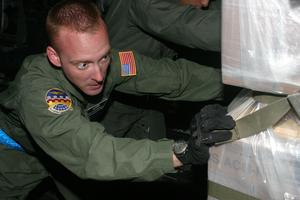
Air Force delivers humanitarian supplies to China

U.S. Air Force Tech. Sgt. Allen Minner, 15th Aircraft Maintenance Squadron, Hickam Air Force Base, Hawaii, pushes a large pallet of humanitarian supplies delivered by a C-17 Globemaster III. Thirteenth Air Force's 613th Air and Space Operations Center Air Mobility Divsion at Hickam AFB coordinated the delivery of 225,890 pounds of relief supplies to Shanghai within 18 hours of Secretary of Defense approval. Thirteenth Air Force Logistics Directorate tasked personnel to prepare cargo and coordinated with Air Terminal Operations Centers at Hickam AFB and Kadena Air Base. Recently, 19 Chinese provinces experienced the most severe winter storms in 50 years, imposing severe hardships on millions of Chinese citizens.